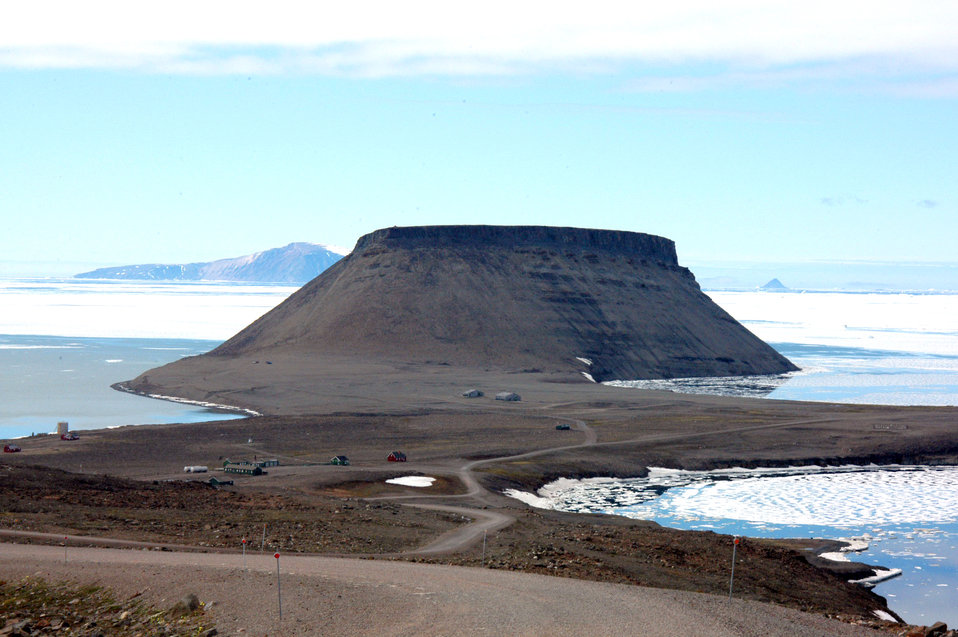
Tee time

THULE AIR BASE, Greenland -- Mount Dundas, overlooking the polar ice cap and three glaciers, was the location for the 20th Annual Mount Dundas Open, the northernmost golf tournament in the world, here July 3. More than 35 participants climbed 800 feet of shale rock to reach the nine-hole par-3 course. The final 75 feet up Mount Dundas featured a rope climb up shear rock face, making it necessary to move golf clubs and other equipment by helicopter.